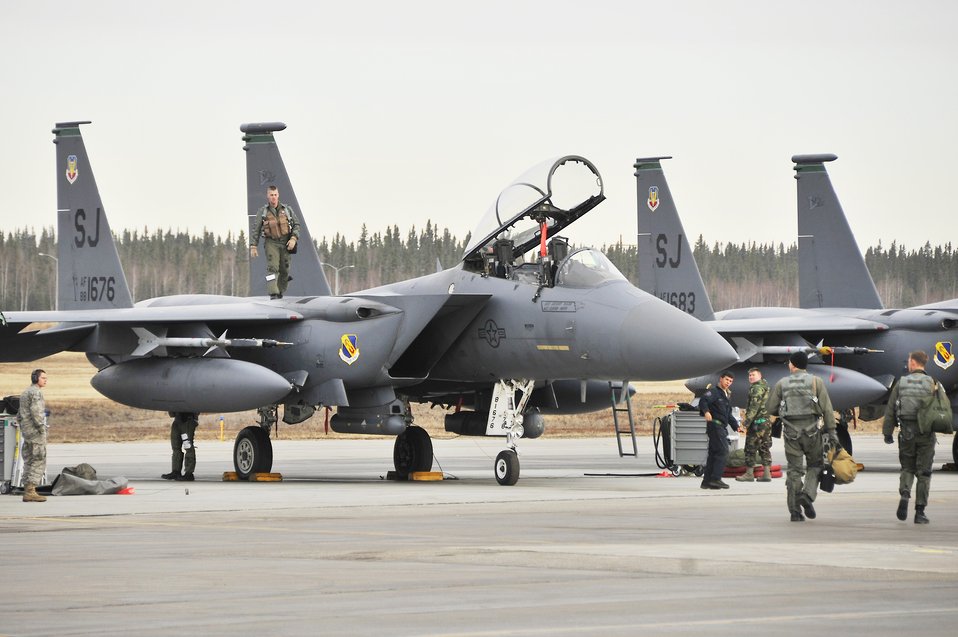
Red Flag-Alaska takes off

Aircrews with F-15E Strike Eagles prepare for their first day of flying during Red Flag-Alaska 10-2, April 19, 2010, at Eielson Air Force Base, Alaska. The Strike Eagles are assigned to Seymour Johnson AFB, N.C.